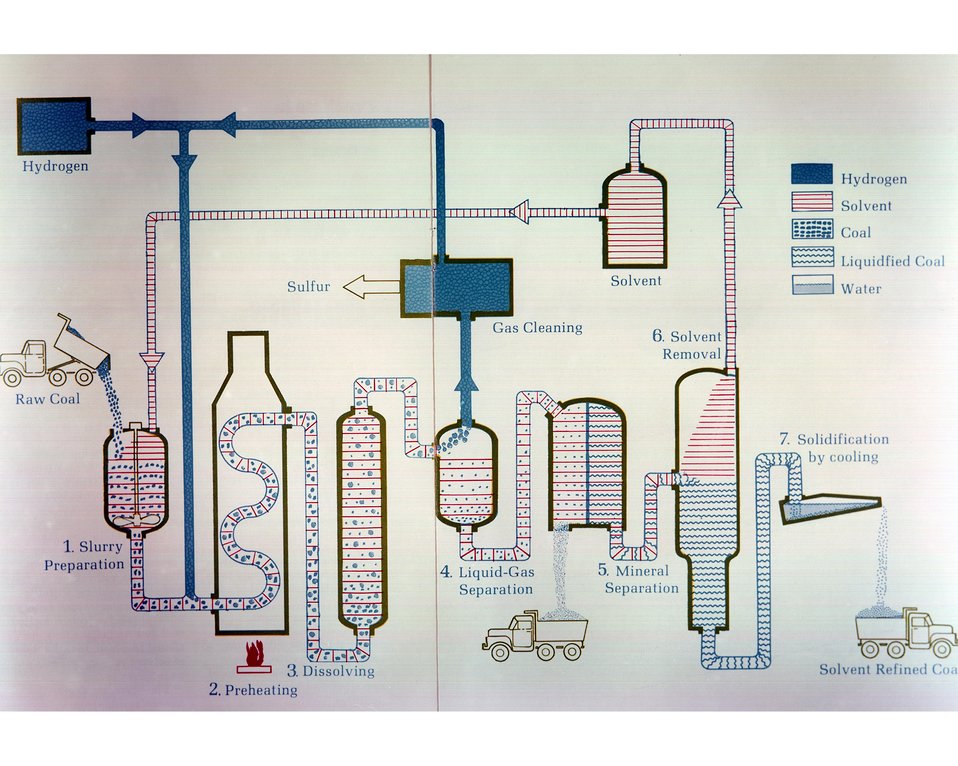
SCHEMATIC ILLUSTRATION OF THE SOLVENT REFINED COAL (SRC) PROCESS.